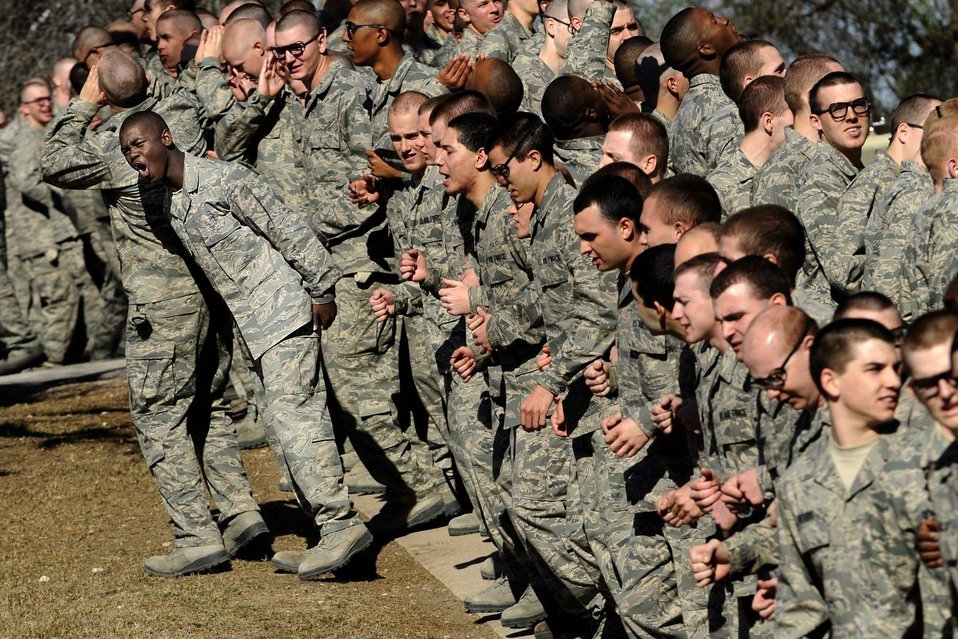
Basic training

Basic trainees rally themselves with motivational chants while waiting to navigate the obstacle course at Lackland Air Force Base, Texas.